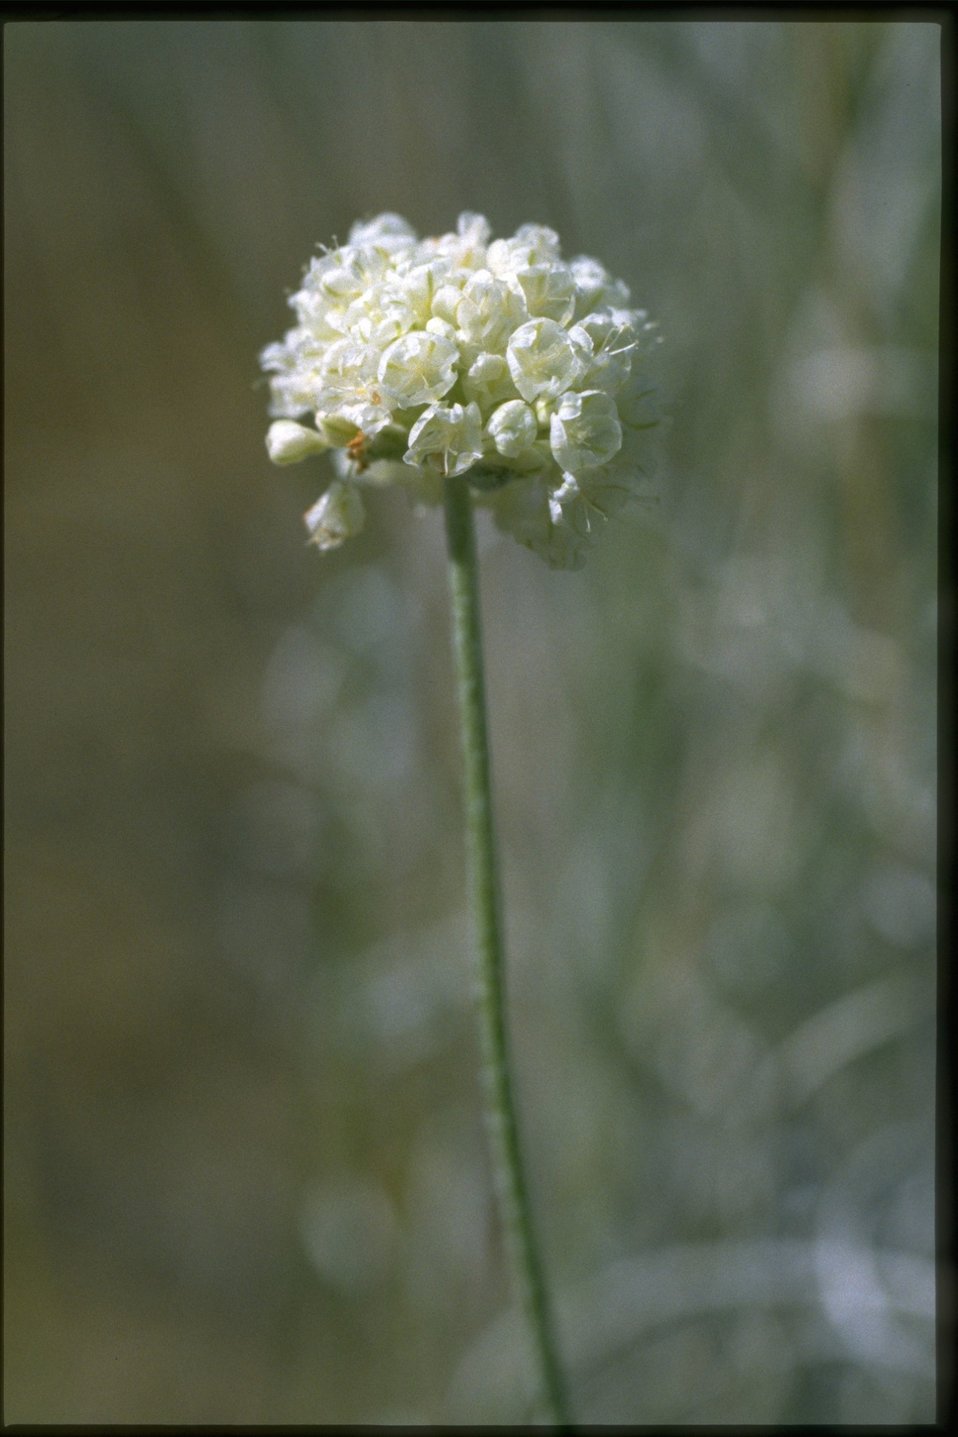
Medium shot of Eriogonum.